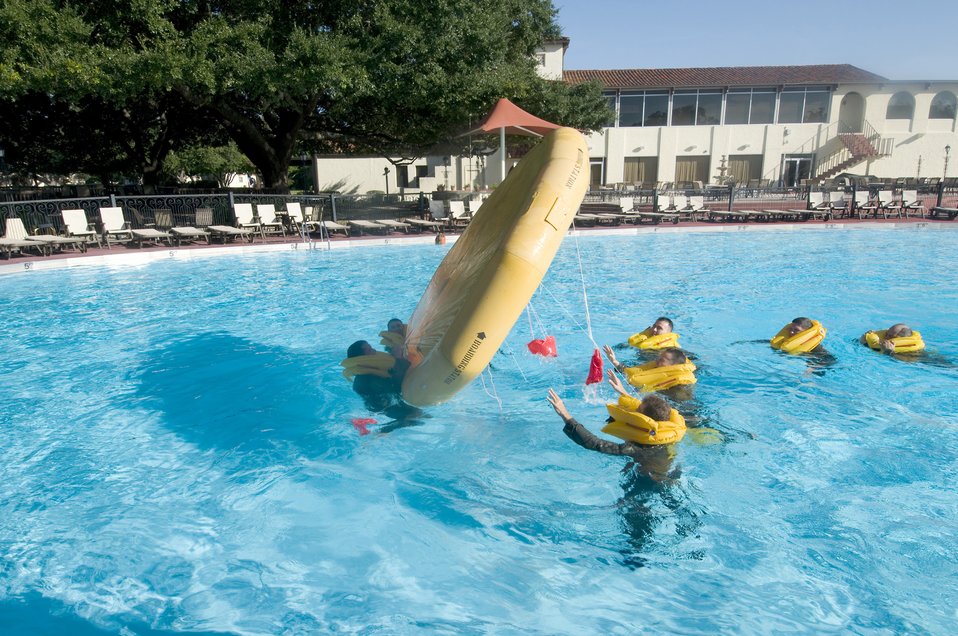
Water survival skills

T-1A Jayhawk instructor pilots maneuver a nine-person raft as they go through refresher water survival class Aug. 6, 2010, at Randolph Air Force Base, Texas.